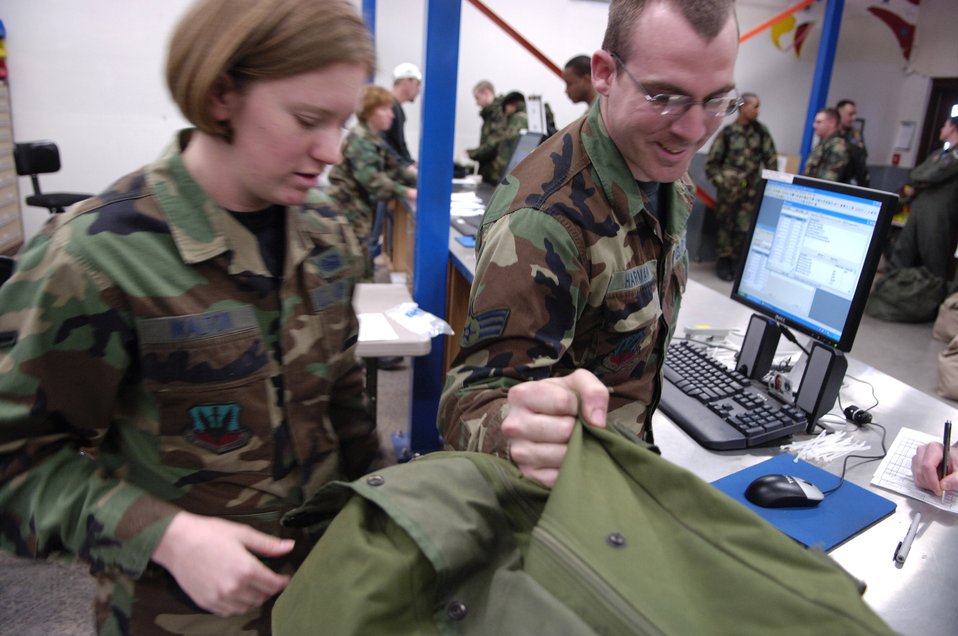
Supporting Bushwhacker

Airman Stephanie Walton and Senior Airman William Harman quickly issue equipment to Airmen as they receive mobility gear during Exercise Bushwacker 07-02 Jan. 20 at Davis-Monthan Air Force Base, Ariz. Bushwacker 07-02 is an operational readiness exercise that tests a wing's deploy abilities. Both Airmen are assigned to the 355th Logistic Readiness Squadron.